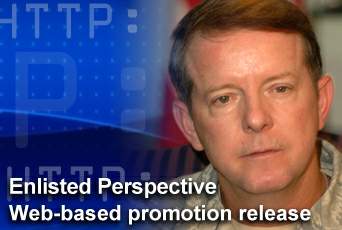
CMSAF Perspective

In the newest